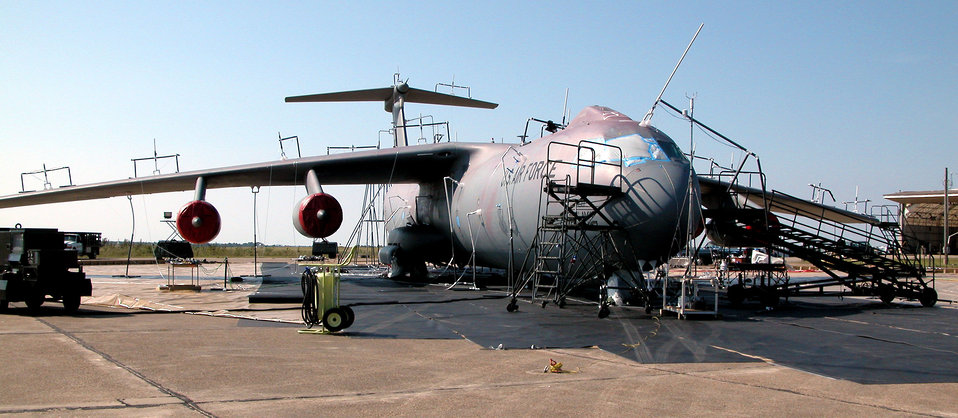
Simulated chemical attack

EGLIN AIR FORCE BASE, Fla. -- A C-141 Starlifter is covered with suction-powered collection funnels to measure the amount of contamination it has received from a simulated chemical attack. The Starlifter is from the 305th Airlift Squadron at McGuire Air Force Base, N.J.